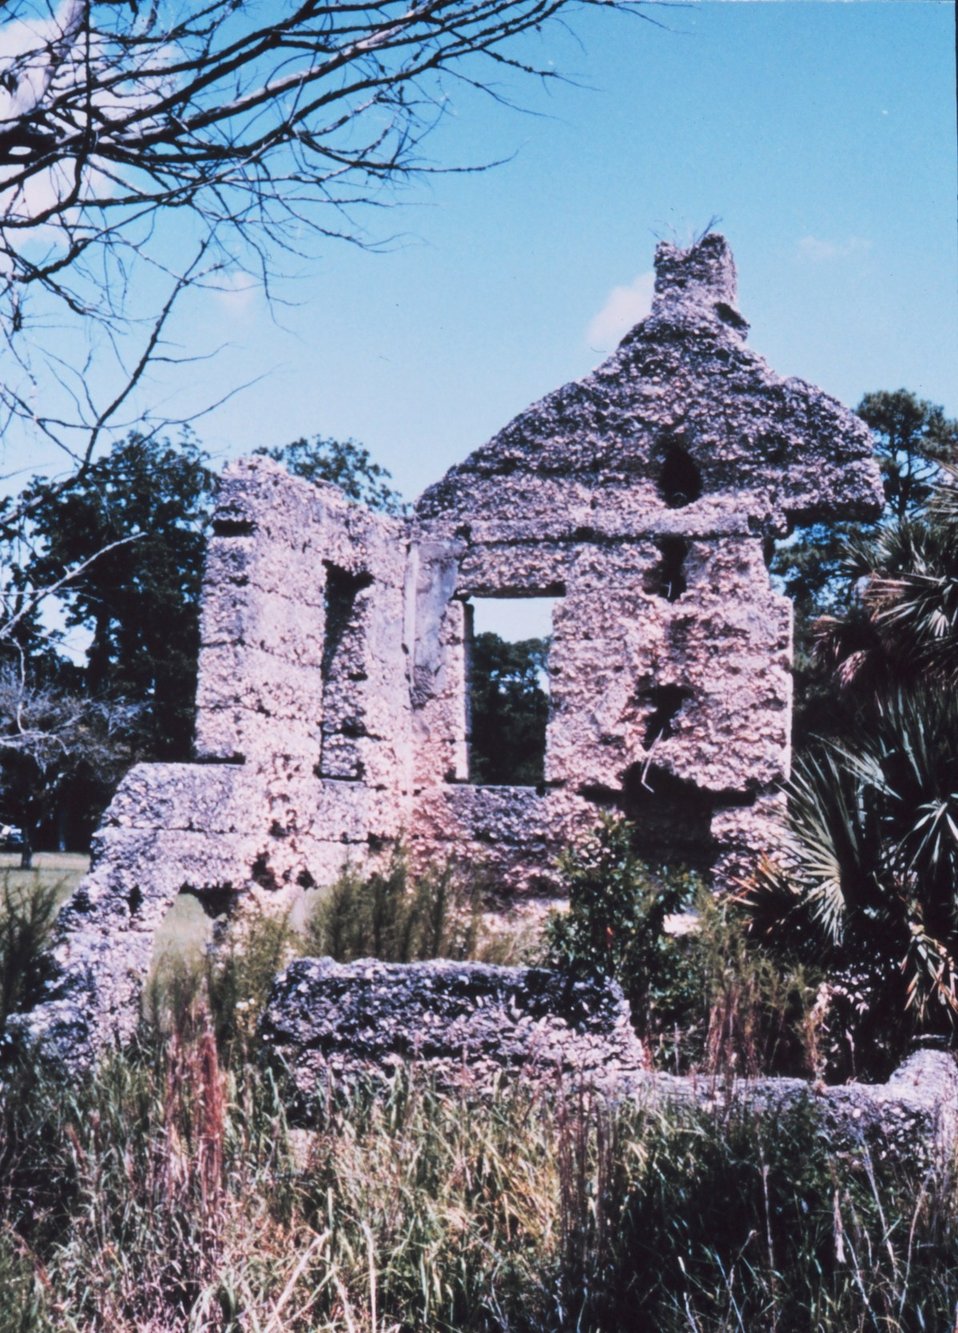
Tabby ruins at Chocolate on the northwest side of the island. Tabby refers to the building material which is a durable cement-like mixture of equal parts of water, sand, shell, and lime. These ruins are part of an antebellum plantation that was deserted following the Civil War.